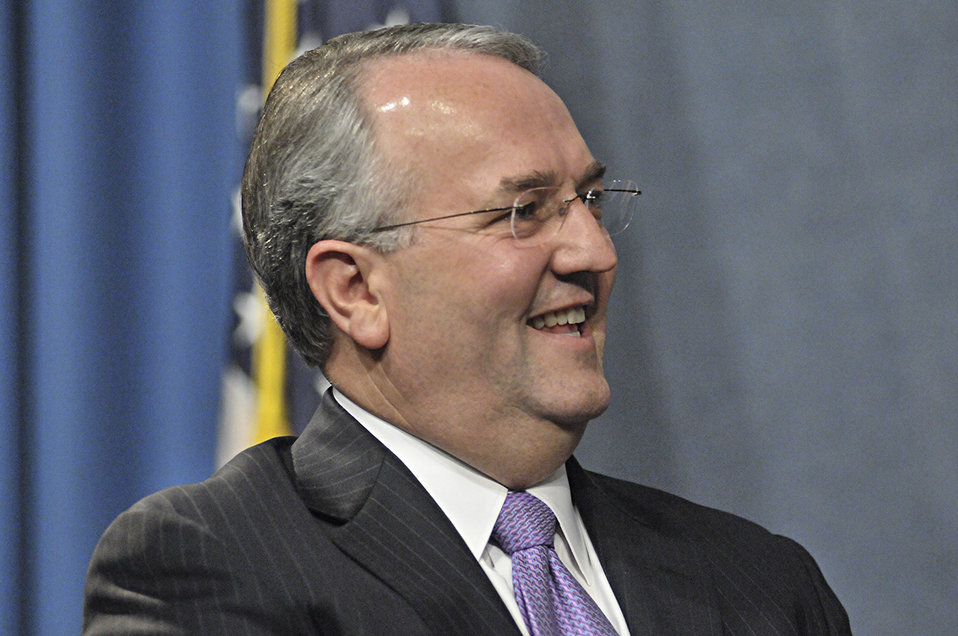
Panel: Increasing Minority Participation in the Energy Sector

Jack Gerard, CEO & President of the American Petroleum Institute, speaks at the first panel on September 24, 2013.